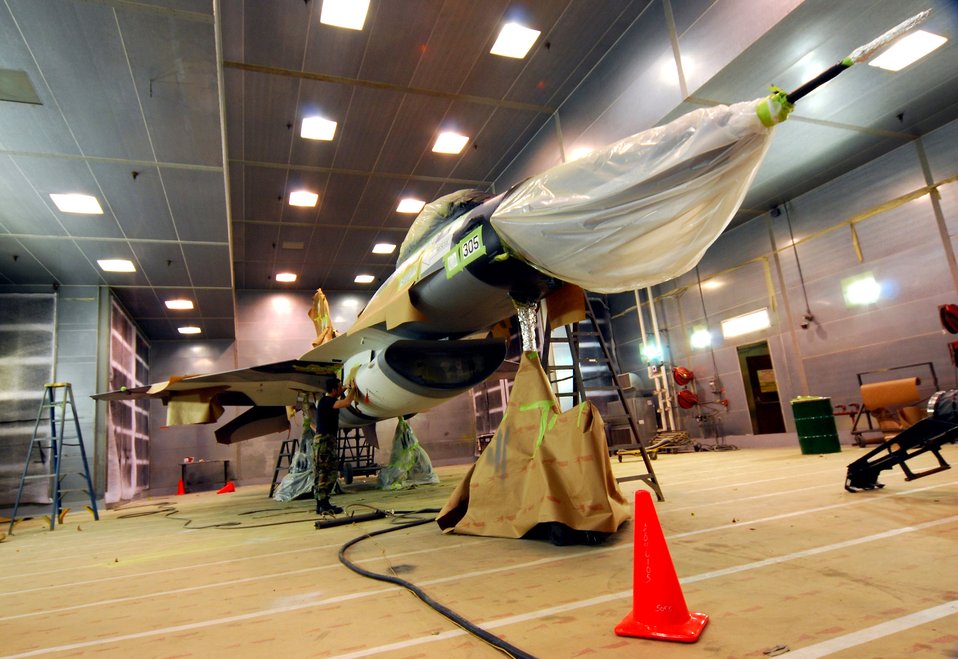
Kunsan Airmen paint arctic F-16 for Eielson

Senior Airman Matthew Wuensch checks the stencil alignment for the finishing touches on an F-16 Fighting Falcon at Kunsan Air Base, South Korea. Airman Wuensch is with the 8th Maintenance Squadron fabrication flight.